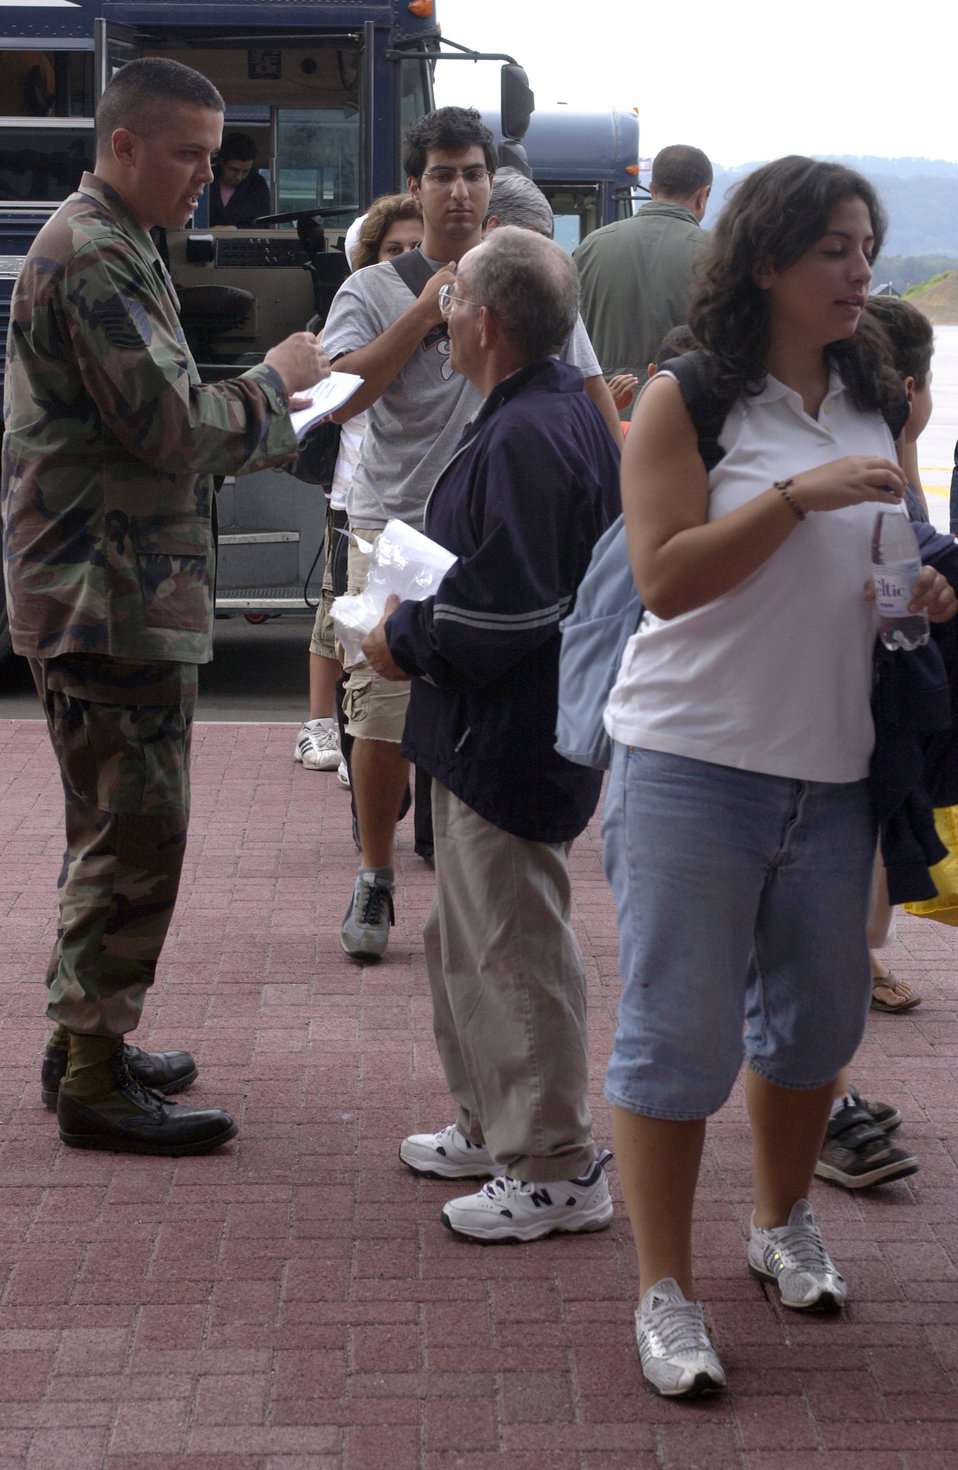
Heading to America

Tech. Sgt. John Holodnick gives a customs processing sheet to David Kazzi of Norfolk, Va., outside the passenger terminal at Ramstein Air Base, Germany, on July 23. Mr. Kazzi was one of several American citizens departing the crisis in Lebanon. They Americans were provided humanitarian assistance on their way to the United States by Airmen at Ramstein. Sergeant Holodnick is with the 435th Logistics Readiness Squadron.